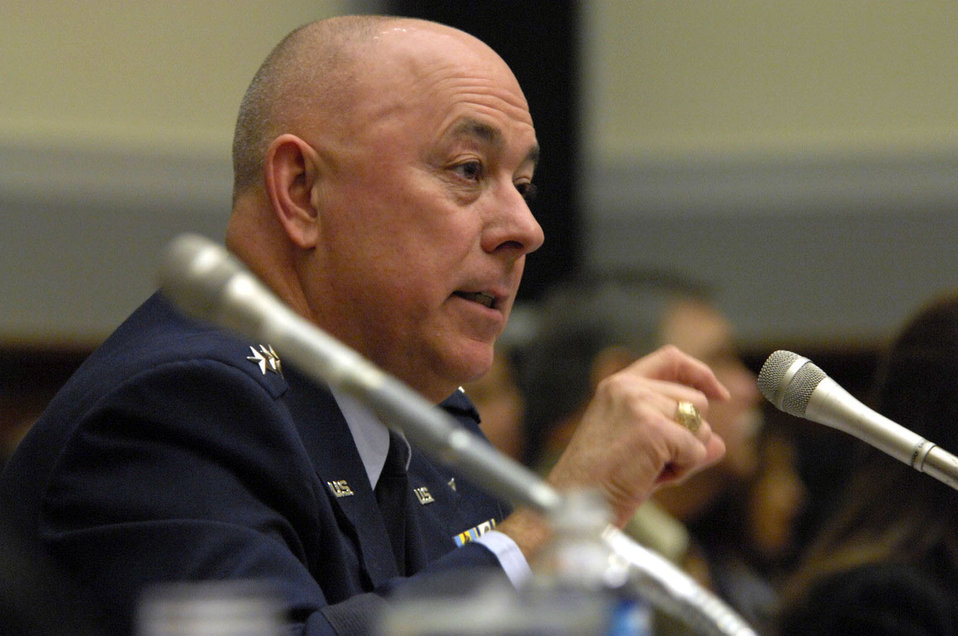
Air Force releases 2007 posture statement

Air Force Chief of Staff Gen. T. Michael Moseley testifies before a House committee on Capitol Hill Feb. 28 about the need for more money to upgrade the Air Force's aging fleet of tanker aircraft.